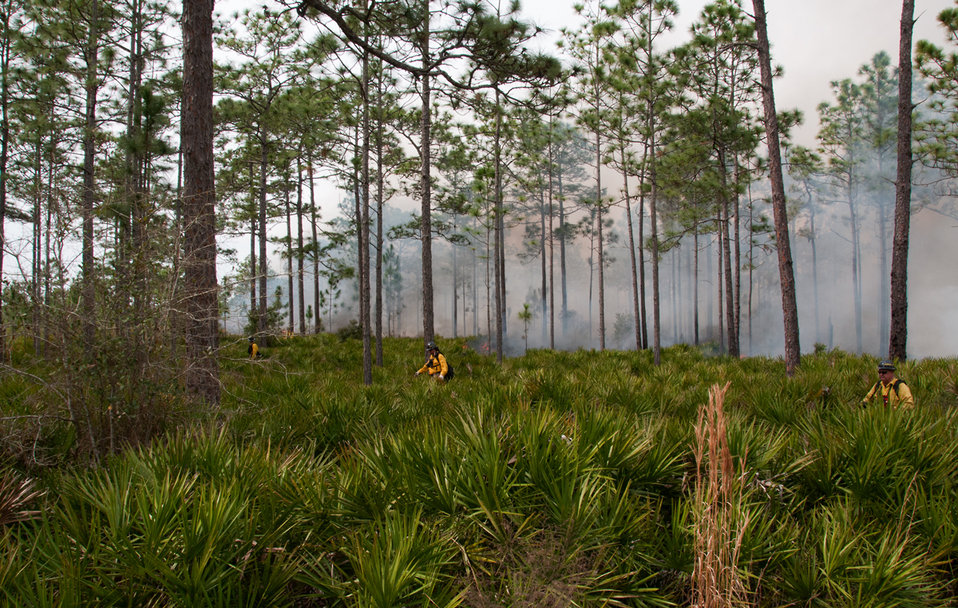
Lake Woodruff Volusia 5 Prescribed Fire Febuary 2014

USFWS firefighters carry drip torches through heavy palmetto to help ignite a flanking fire. On February, 12 2014 USFWS firefighters conducted a 137 acre prescribed fire at Lake Woodruff NWR to reduce the wildfire risk and enhance the wildlife habitat on the southern end of the refuge.